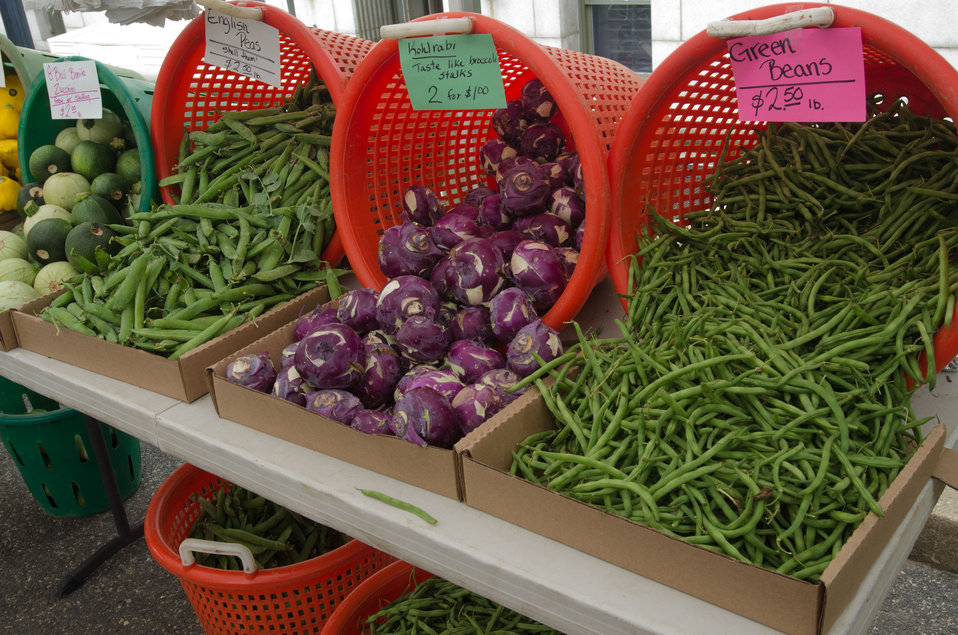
Fresh vegetables from C & T Produce at the U.S. Department of Agriculture (USDA) summer farmers market opening of the 17th season at the USDA Whitten Building east parking lot in Washington, D.C., on Friday, May 31, 2012. This year's theme is Grow, Healthy, Eat Healthy & Be Healthy. USDA and Fuel Up to Play 60, in partnership with the National Dairy Council and the National Football League, invited residence, visitors and local school children to participate in opening day activities. Hip Hop Public Health featuring Easy A.D. from Cold Crush Brothers and disk jockey Artie Green play music and invite people to get up on stage to dance or hula hoop to get active. D.C. Truck Farm help people know from what plants, that certain herbs, fruit and produce come from by giving tail-gate tours of the garden growing in the bed of their pickup truck. The Peoples Garden Initiative and USDA Executive Master Gardeners gave away a variety of fruit and produce seedlings to include the Tomato ‘Abraham Lincoln’ in celebration of the USDA 150th Anniversary and to share their harvest. New features for 2012 include an on-site sign language interpreter, a hand washing station, and a USDA-certified organic vendor. Other products selling today are fresh fruits, vegetables, herbs, baked goods, meats, kettle popcorn, local honey, hand-made soap and more.